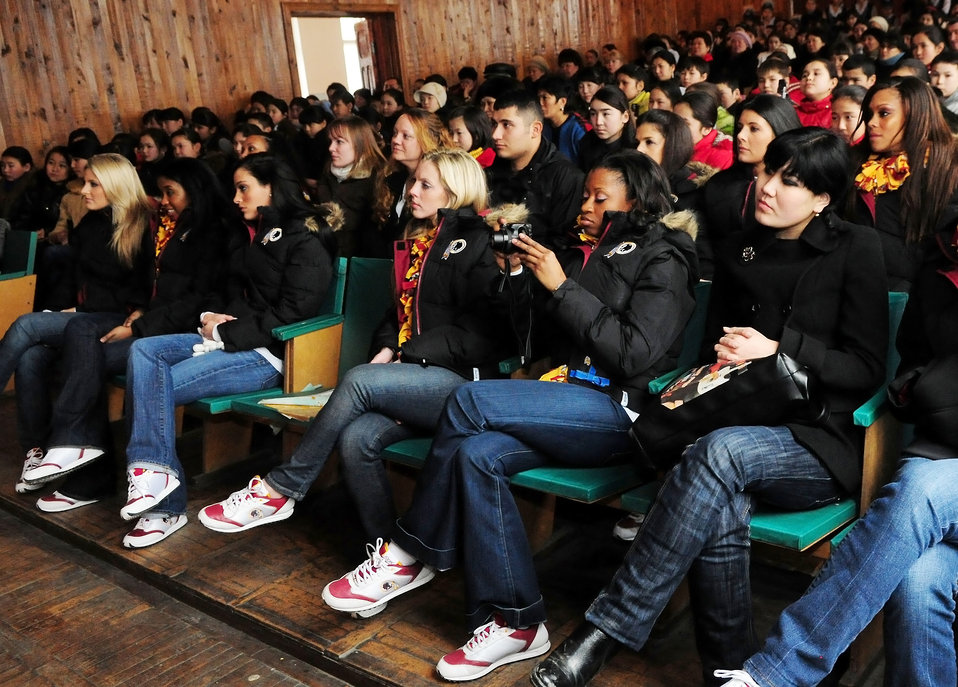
Cheers to Bishkek

The Washington Redskins cheerleaders watch as students from the Abdraev Musical Boarding School play traditional Kyrgyz instruments Jan. 27, 2010, in Bishkek, Kyrgyzstan.